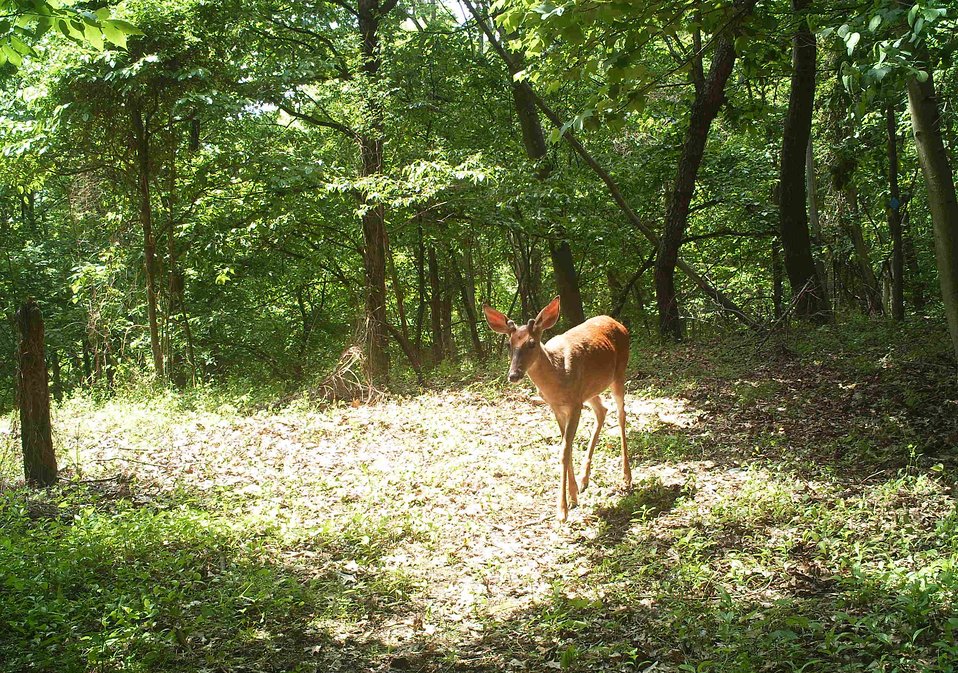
White-tailed deer

Ohio River Islands National Wildlife Refuge, WV.